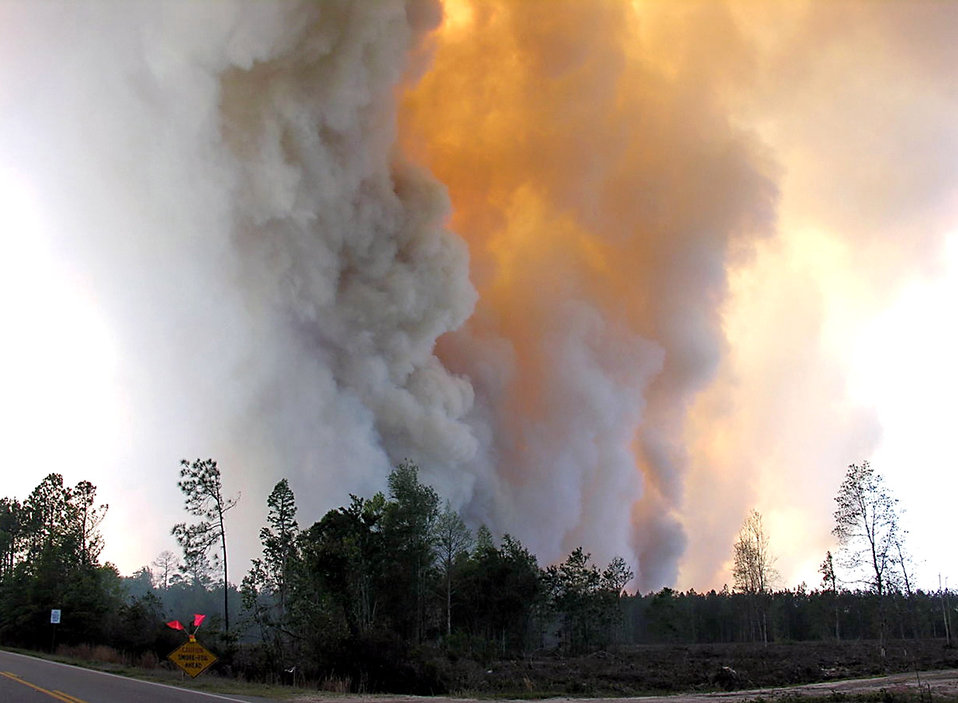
Air Force firefighters help to put out Georgia fires

Smoke rises from a forest fire in southeastern Georgia. Moody Air Force Base firefighters have been supporting other fire departments to put out the fire since April 21. The 23rd Civil Engineer Squadron Fire and Emergency Services Flight are helping support local fire departments by ensuring they have sufficient amounts of water to put out the fires. By using tankers that can hold 5,000 gallons of water, up to five fire trucks can be filled.